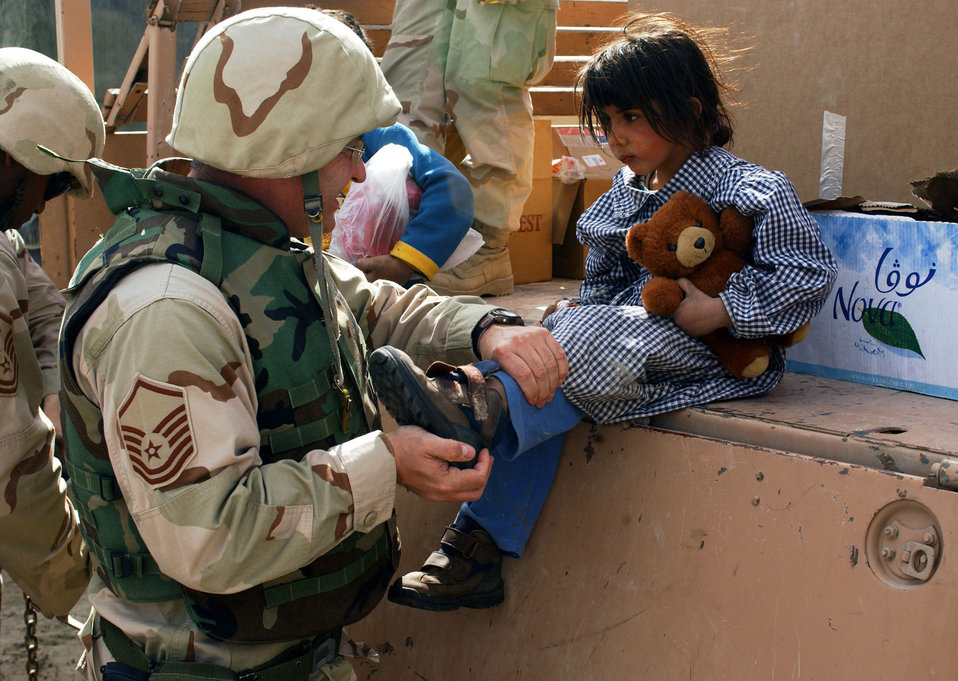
If the shoe fits...

TALLIL AIR BASE, Iraq -- Master Sgt. Terry Nelson fits a pair of shoes on a young Bedouin girl during a humanitarian mission here. He is a Public Affairs craftsman from the 388th Fighter Wing at Hill Air Force Base, Utah.